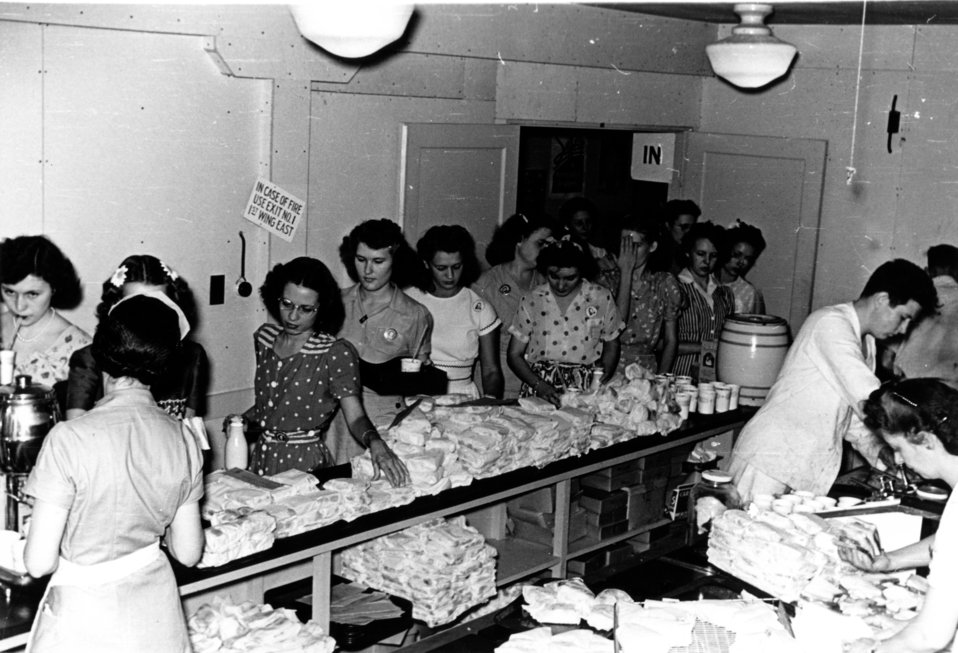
Daily Life at Oak Ridge